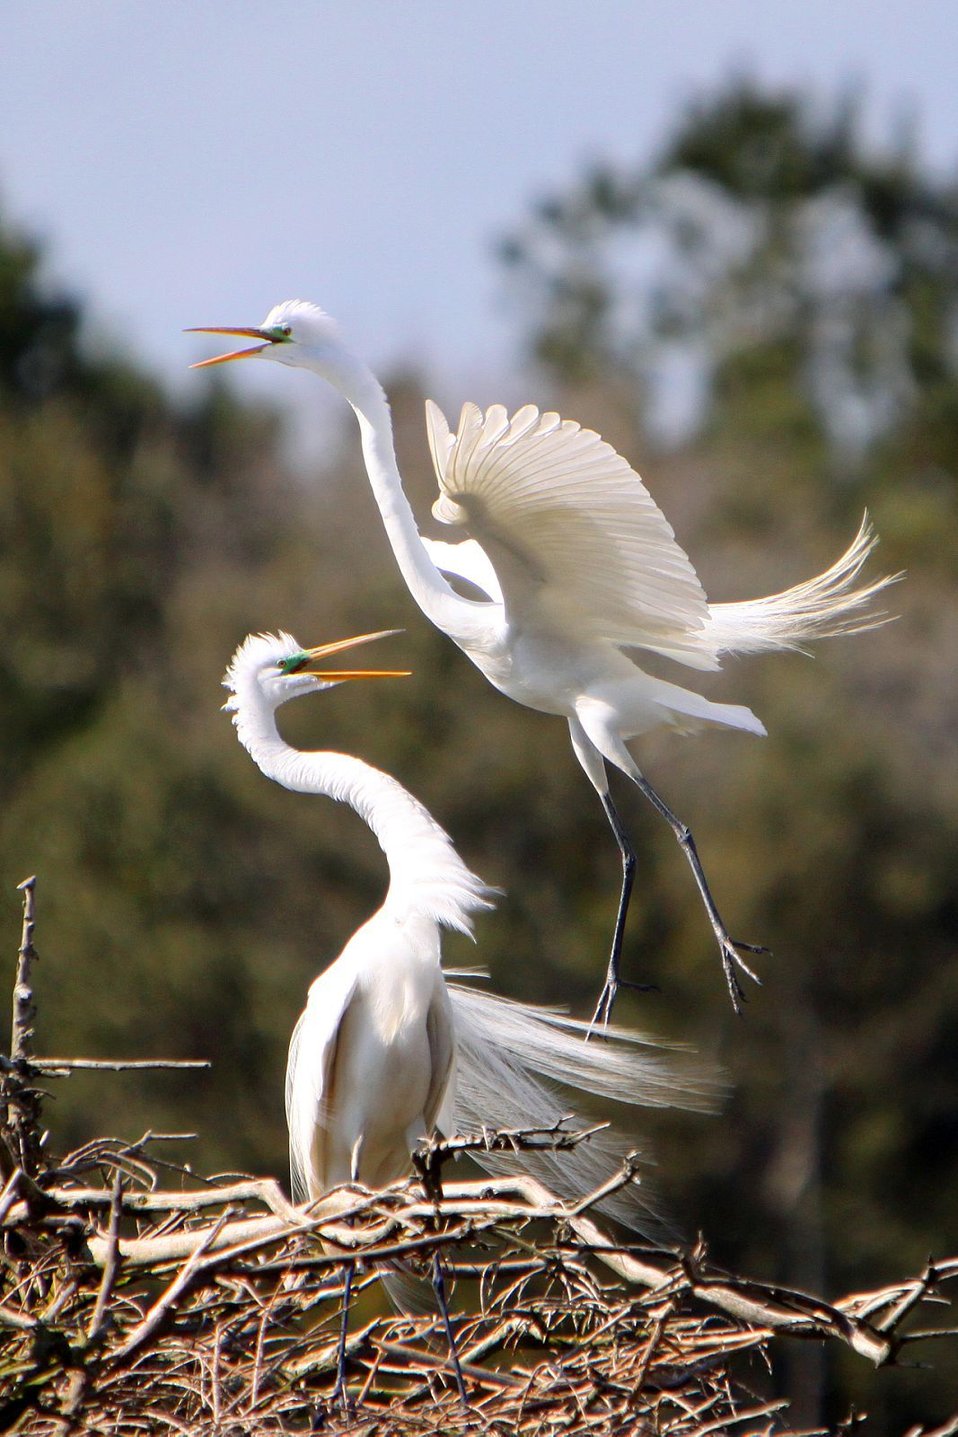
Great egrets in mating plumage

Harris Neck National Wildlife Refuge, Georgia.